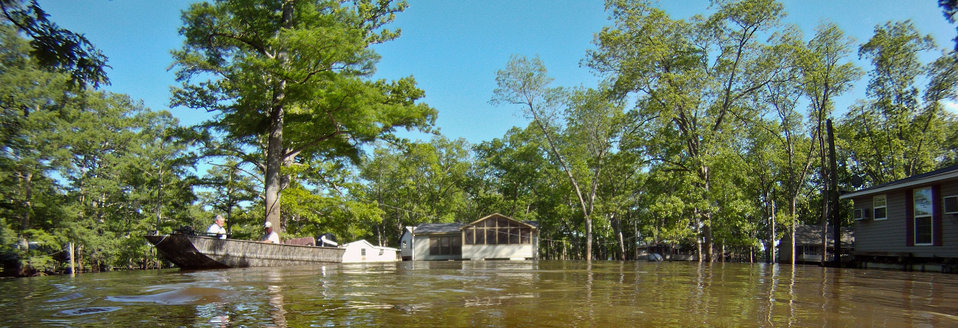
Lauderdale County Mayor Rod Schuh (long sleeve blue shirt) and Disaster Management Director Jim Jarrett pilots a motorboat to survey the river flood and inundation impact on the people and property of this county in Tennessee, on Saturday, May 21, 2011. The Mississippi and two other rivers border Lauderdale County on three sides. Today’s task was to look at as many of the approximately 300 homes in the river basin as possible.